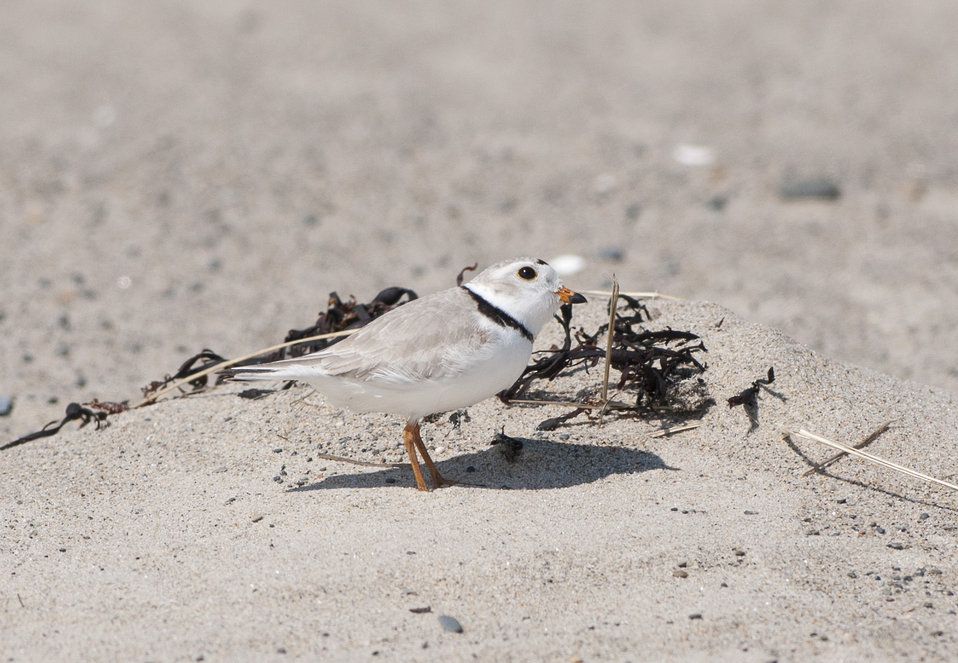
Piping Plovers Return - Spring 2014

One of the first returning piping plovers to the Maine beaches in Spring 2014!